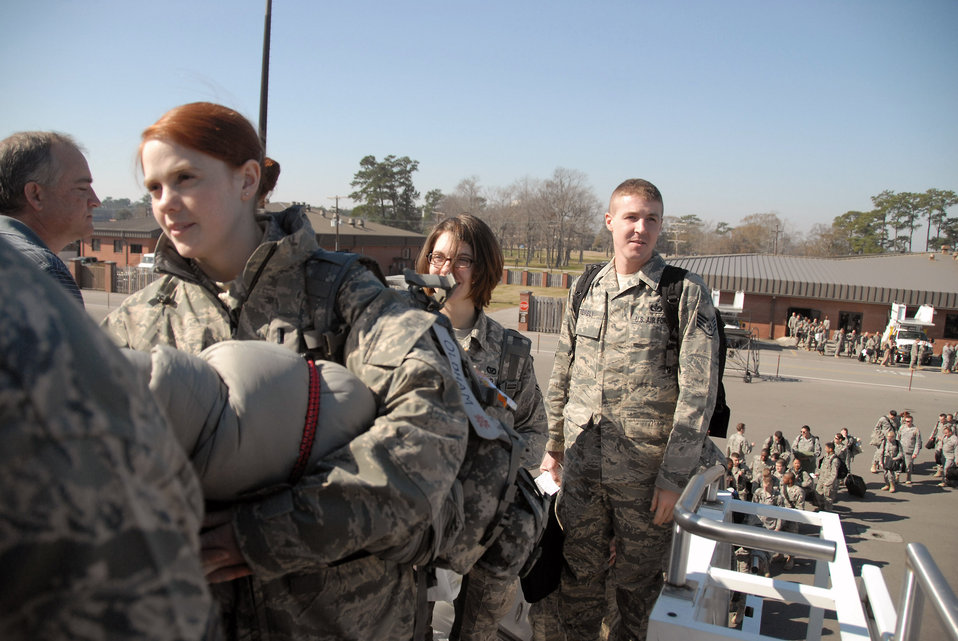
CAFB: Gateway to AOR

Airmen from various bases throughout the Air Force wait to board an aircraft bound for Southwest Asia in support of Operations Enduring and Iraqi Freedom on Charleston Air Force Base, S.C. Feb. 7. Charleston AFB is one of four aerial ports of embarkation to make it more convenient for Airmen to deploy to the area of responsibility.